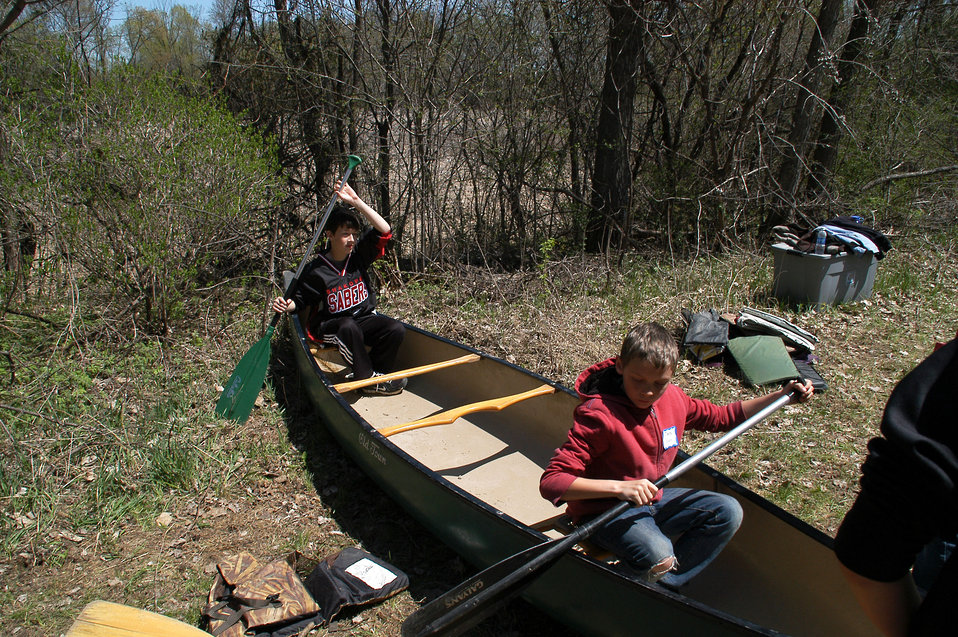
Paddling Practice

Students from a local elementary school learn Boating Safety and how to not rock the boat!